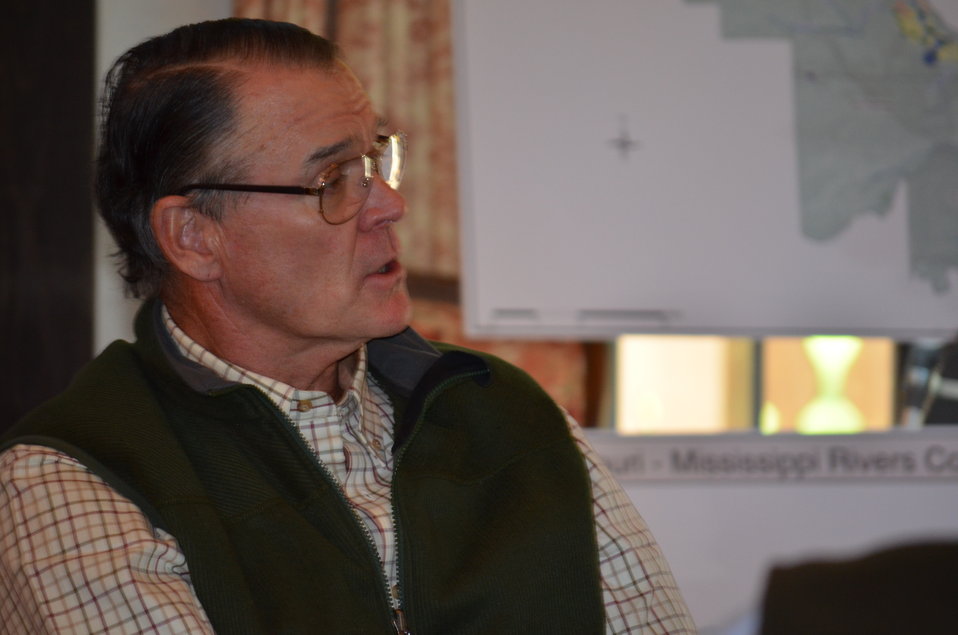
Private landowner discussing Partners for Fish and Wildlife Program with Acting Asst. Secretary. USFWS/Ashley Spratt